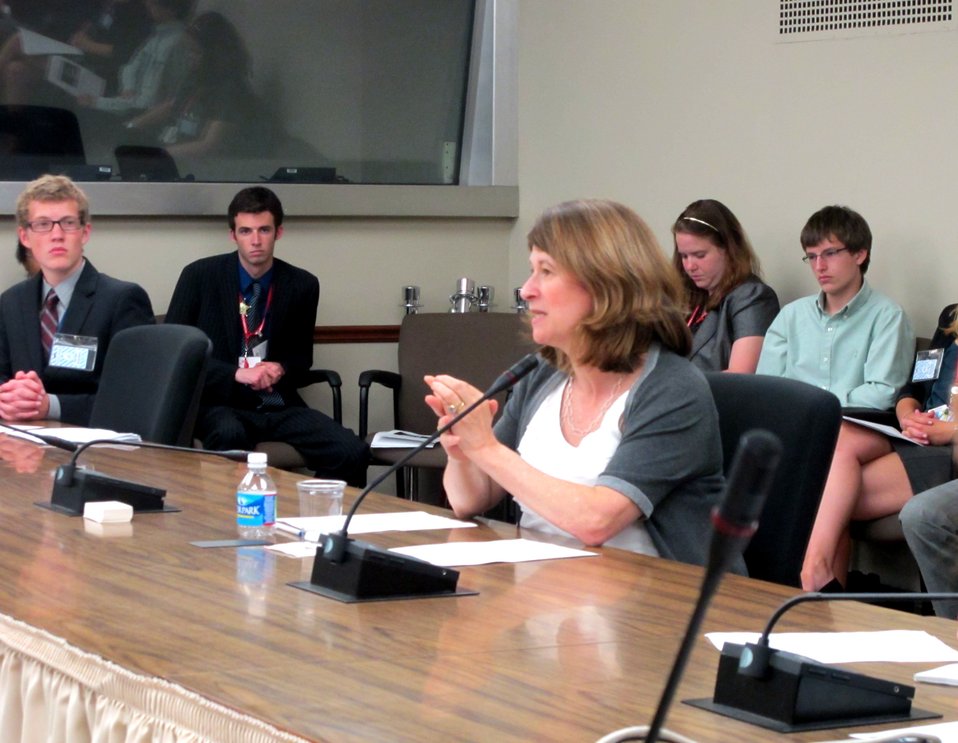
Senior Policy Advisor Efron Speaks to a Group of Students

Senior Policy Advisor for Democracy, Human Rights and Labor Sonni Efron speaks to a group of 83 students visiting the U.S. Department of State in Washington, D.C., on July 19, 2011.